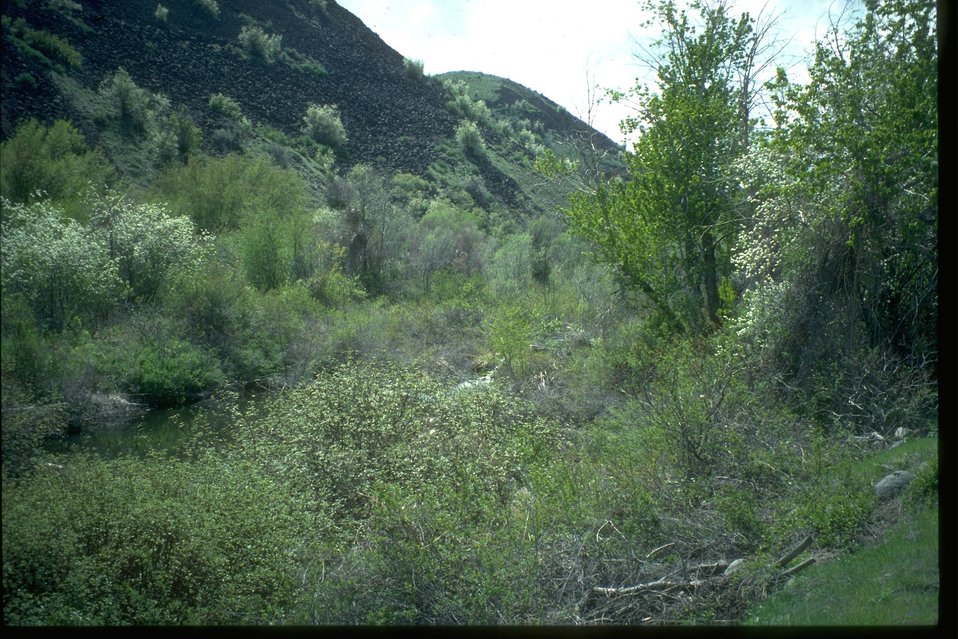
Colockum Creek functioning properly in Central Washington.